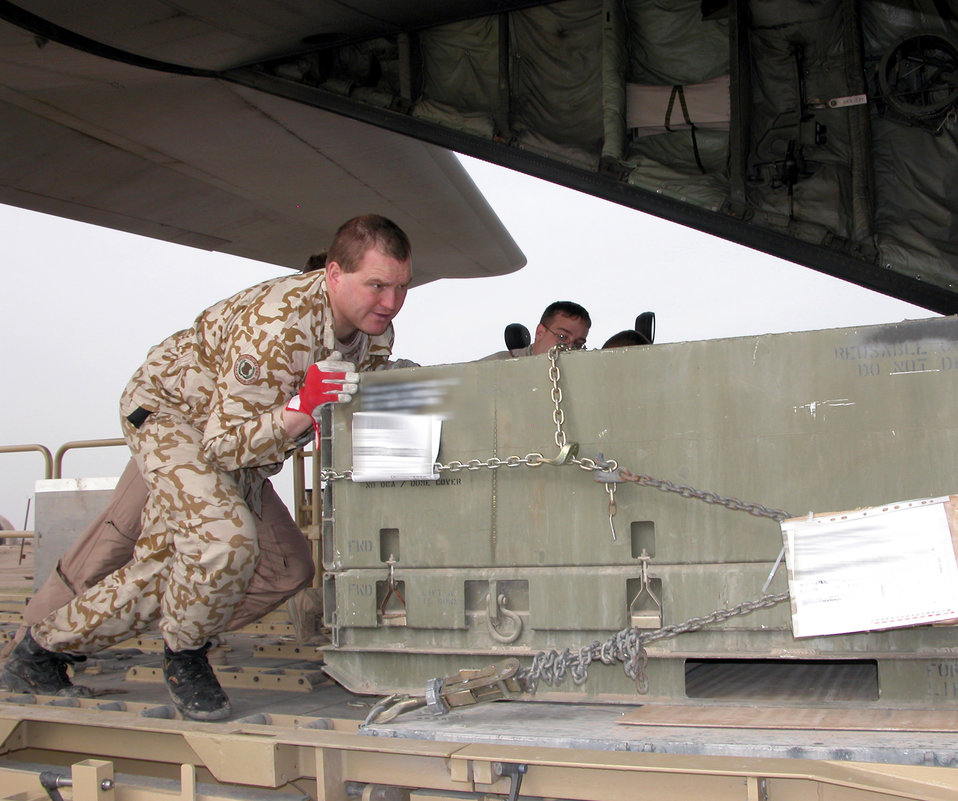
A day's work

TALLIL AIR BASE, Iraq -- Estonian Cpl. Taivo Kahrets helps push a pallet of cargo into a Georgia Air National Guard C-130 Hercules here Jan. 14. The corporal is one of about a dozen Estonians helping the base's aerial port flight move cargo through here.